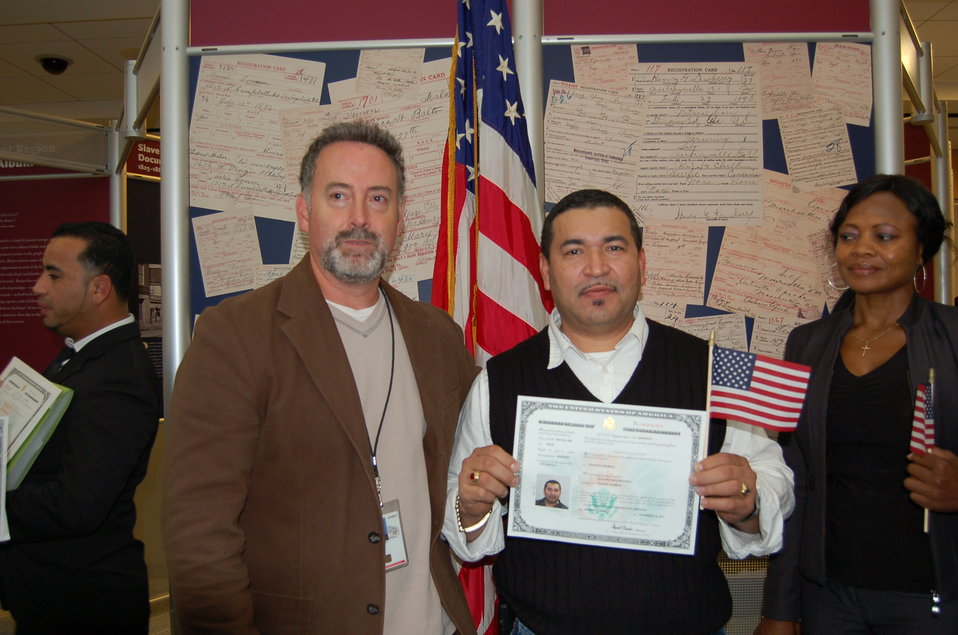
New Citizens